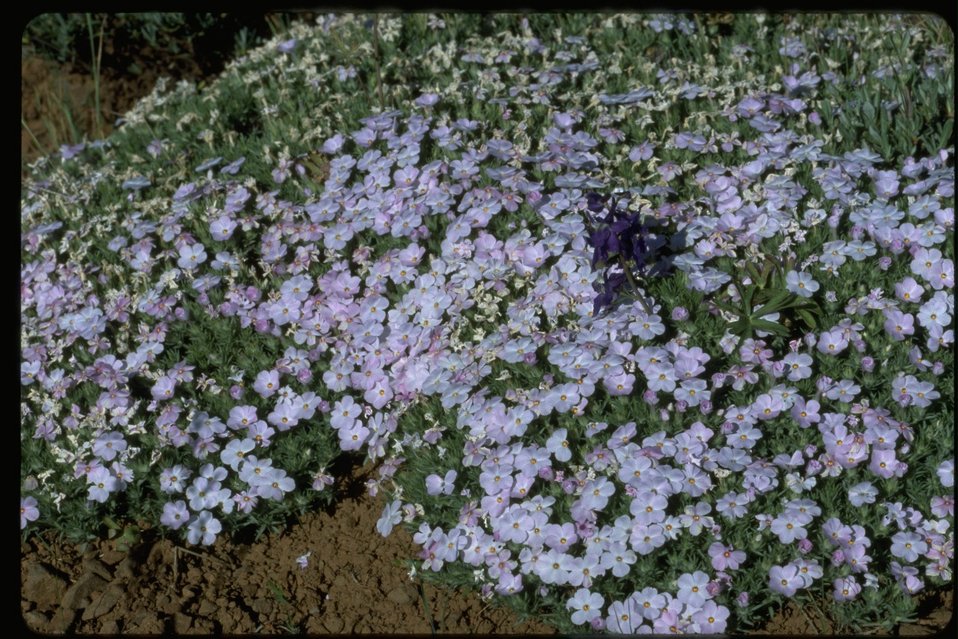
Wide shot of phlox with delphinium/Larkspur wildflowers.